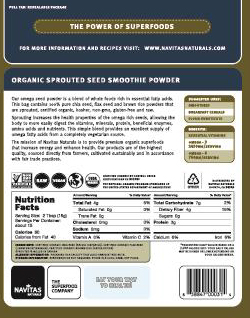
RECALLED – Sprouted Chia Seed Powder Products

June 6, 2014 – Product Recall – Navitas Naturals Expands Voluntary Recall for Organic Sprouted Chia Powder Products.